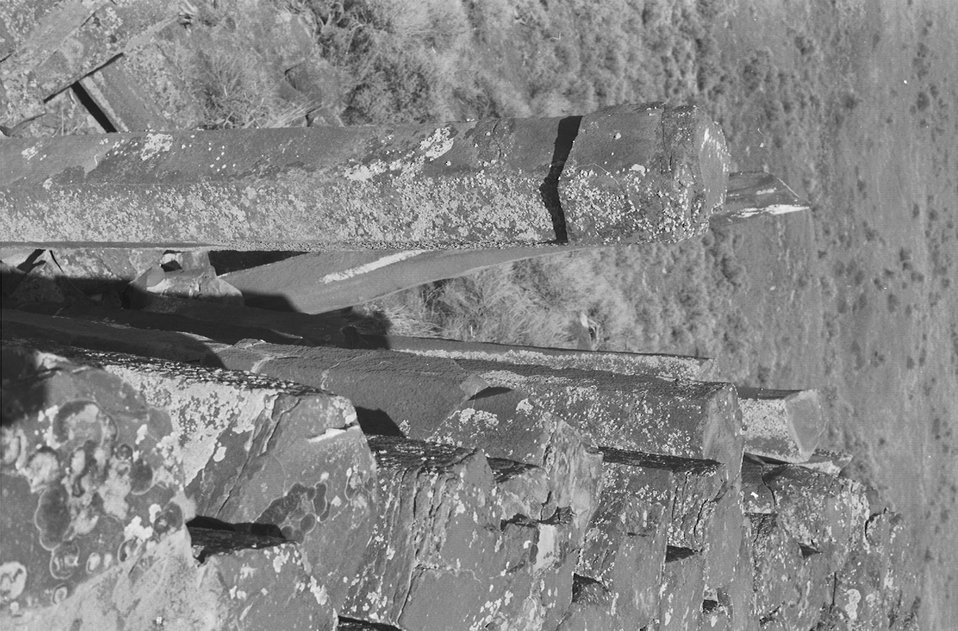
Isolated Columns of basalt Hexagonal Basalt UCSC Upper Columbia Salmon Clearwater District